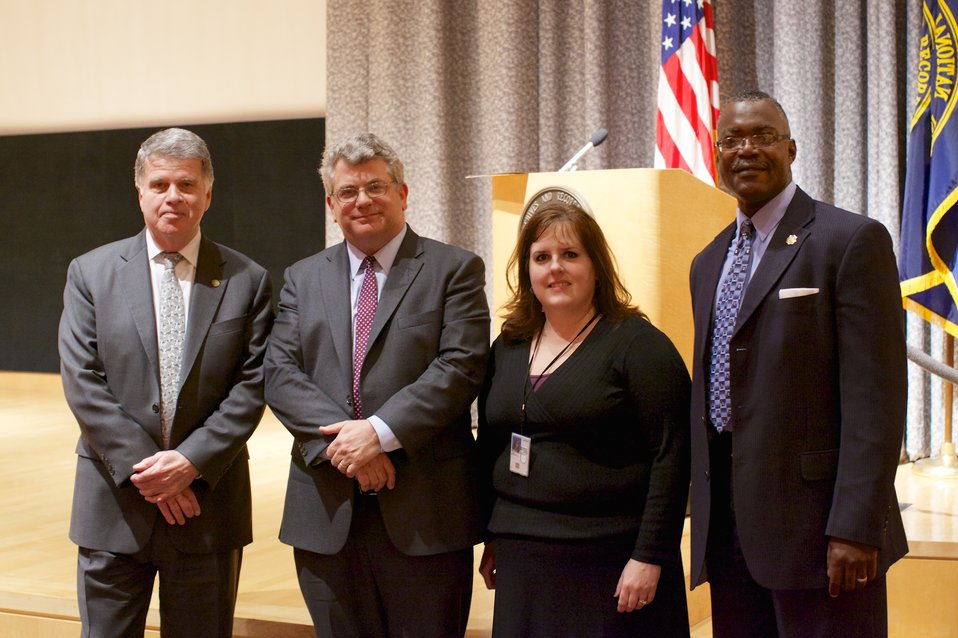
CFC Recognition Event